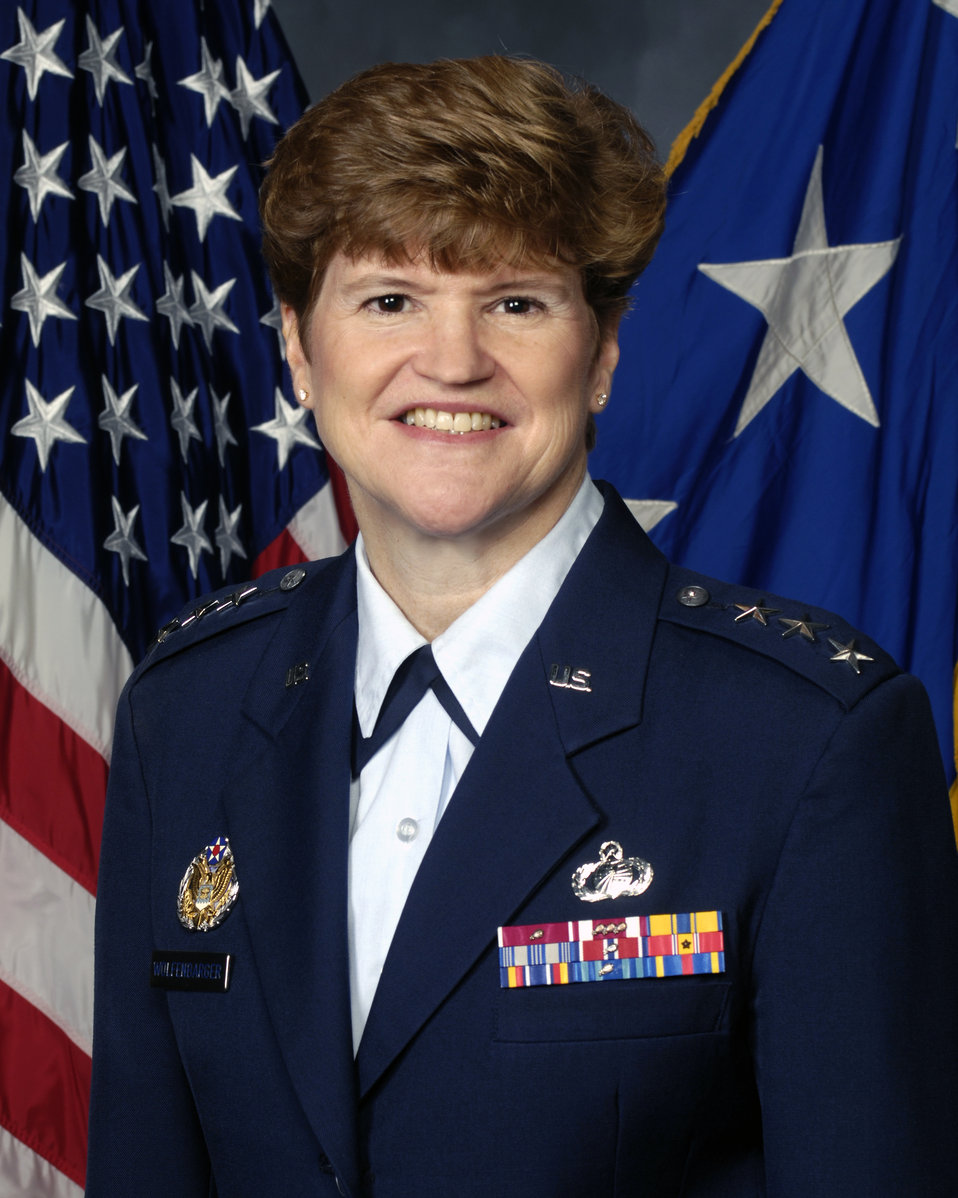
Senate confirms new AFMC vice commander

Lt. Gen. Janet C. Wolfenbarger was confirmed by the Senate and promoted immediately to the rank of lieutenant general with assignment to the position of Air Force Materiel Command vice commander.